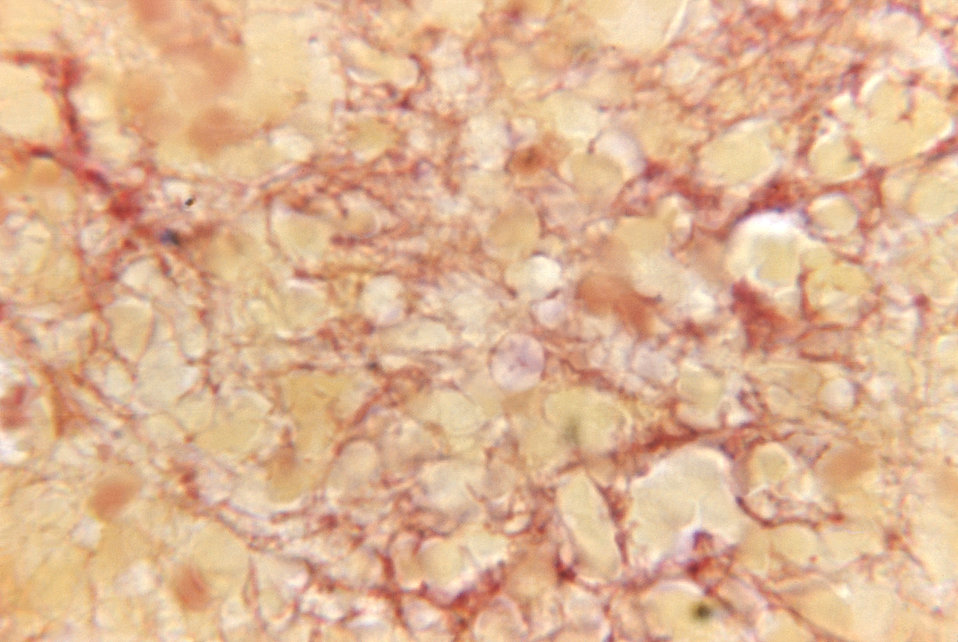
Magnified 800X, this photomicrograph revealed some of the pathologic cytoarchitectural changes seen in a brain abscess tissue specimen due to actinomycosis. One of the primary features, is the presence of a fine network of branching hyphae.